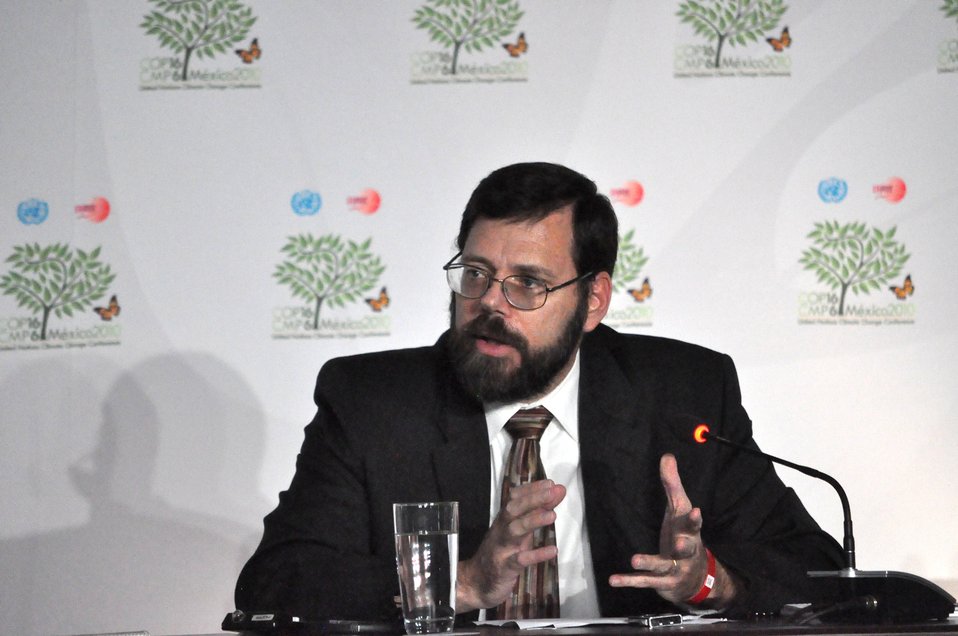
Deputy Special Envoy Pershing Leads the U.S. Press Briefing at COP-16

Deputy Special Envoy Jonathan Pershing leads the U.S. press briefing at the 16th Session of the Conference of the Parties to the UN Framework Convention on Climate Change in Cancun, Mexico, on November 29, 2010.